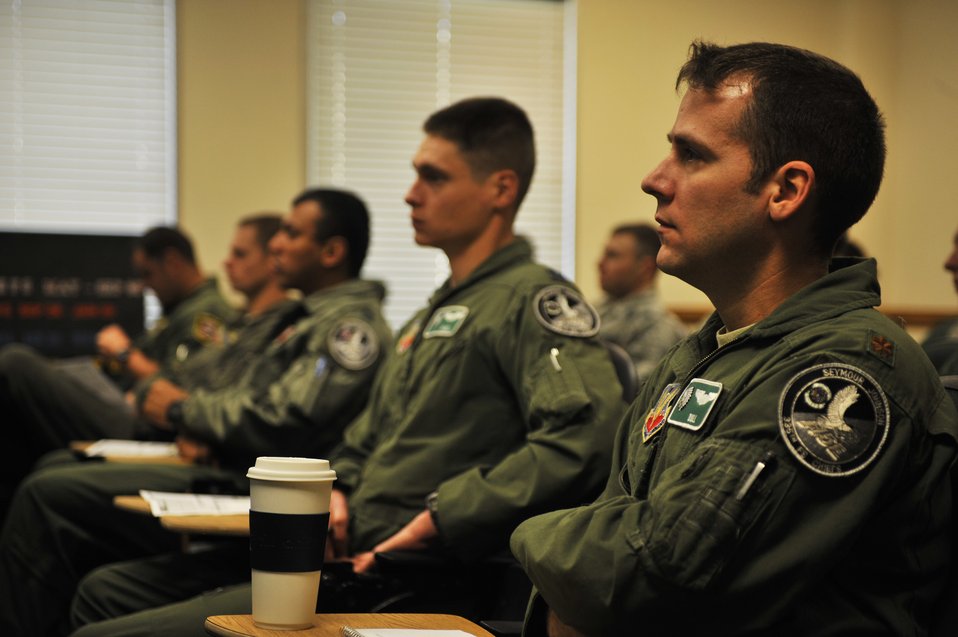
Mustang Mayhem

Airmen from the 4th Fighter Wing attend a mission briefing for Mustang Mayhem April 13, 2012, at Seymour Johnson Air Force Base, N.C. Mustang Mayhem will take place April 16 and will involve more than 70 F-15E Strike Eagles lining up on the runway to demonstrate the wing's capability to generate air power. The jets will then launch for an exercise modeled after a World War II battle 70 years ago.